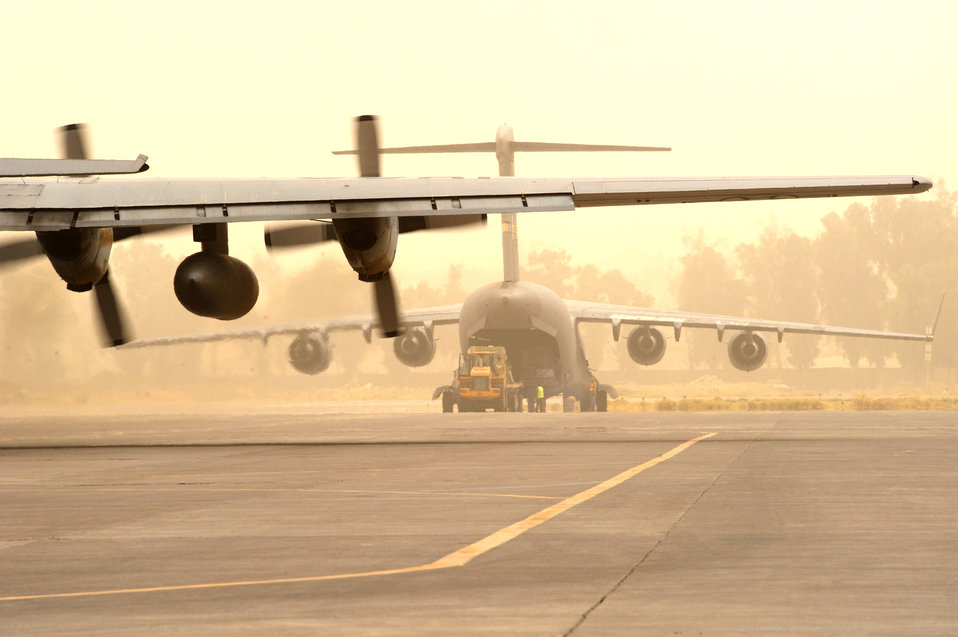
A typical summer day on the ramp

Taking the dust in stride, a C-130 Hercules prepares to taxi out July 31 as a C-17 Globemaster III is loaded with cargo at Forward Operating Base Diamondback in Mosul, Iraq.